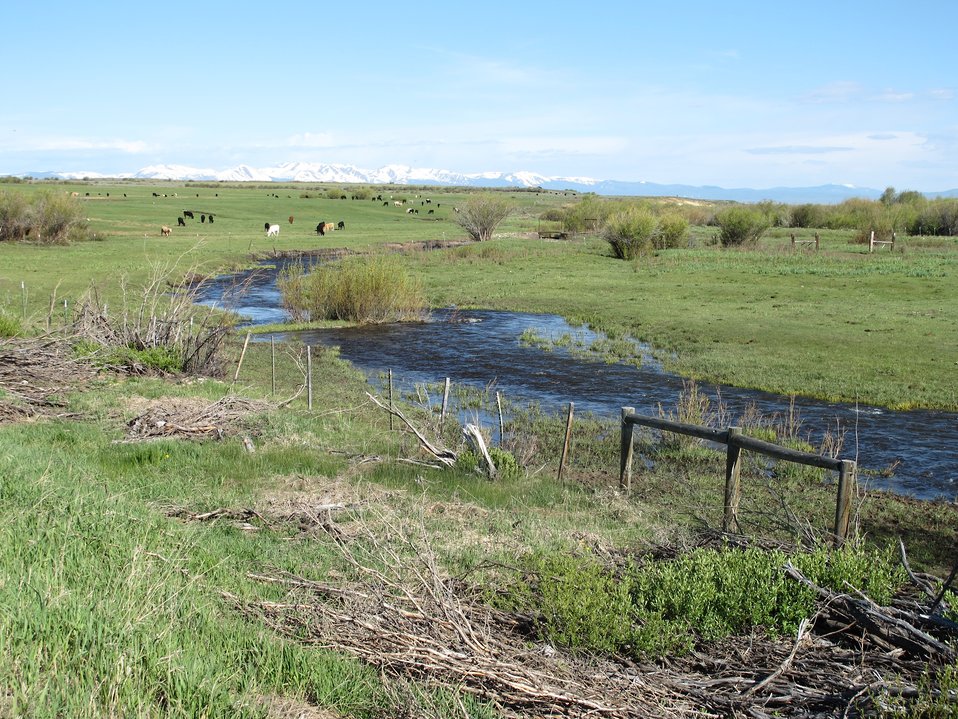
Cattle grazing in North Park